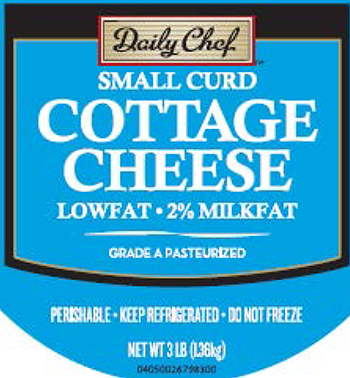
RECALLED – Cottage Cheese products

May 17, 2014 – Product Recall – Kraft Foods Group Voluntarily Recalls Select Cottage Cheese Products Due to Out-of-Standard Storage Temperatures
Certain Knudsen Cottage Cheese, Breakstone’s Cottage Cheese, Simply Kraft Cottage Cheese and Daily Chef Cottage Cheese Products Included in the Recall
.